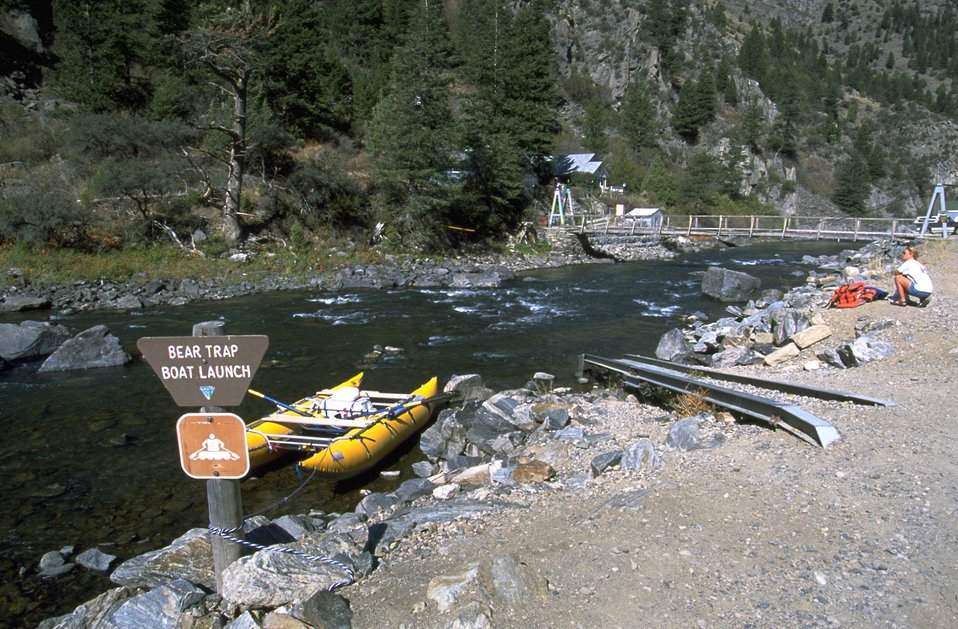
Boat Launch on the Madison - Cataraft in the water